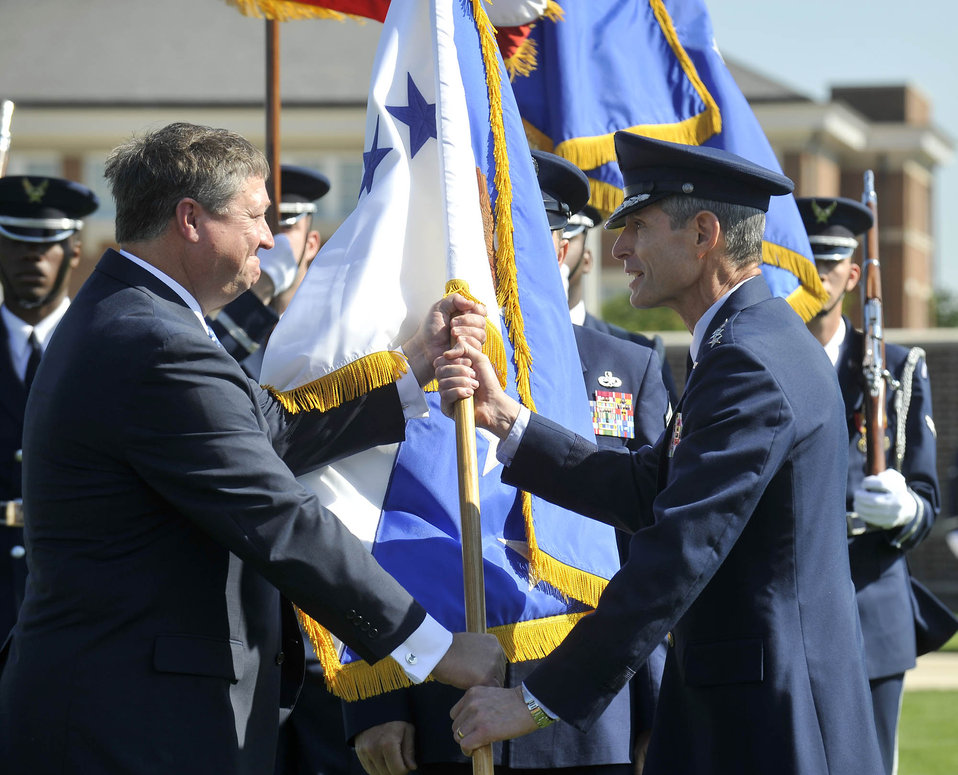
General Schwartz welcome ceremony

Gen. Norton A. Schwartz accepts the Air Force flag from Acting Secretary of the Air Force Michael B. Donley Aug. 12 during a welcoming ceremony at Bolling Air Force Base D.C., in honor of General Schwartz. The general is the 19th Air Force chief of staff.